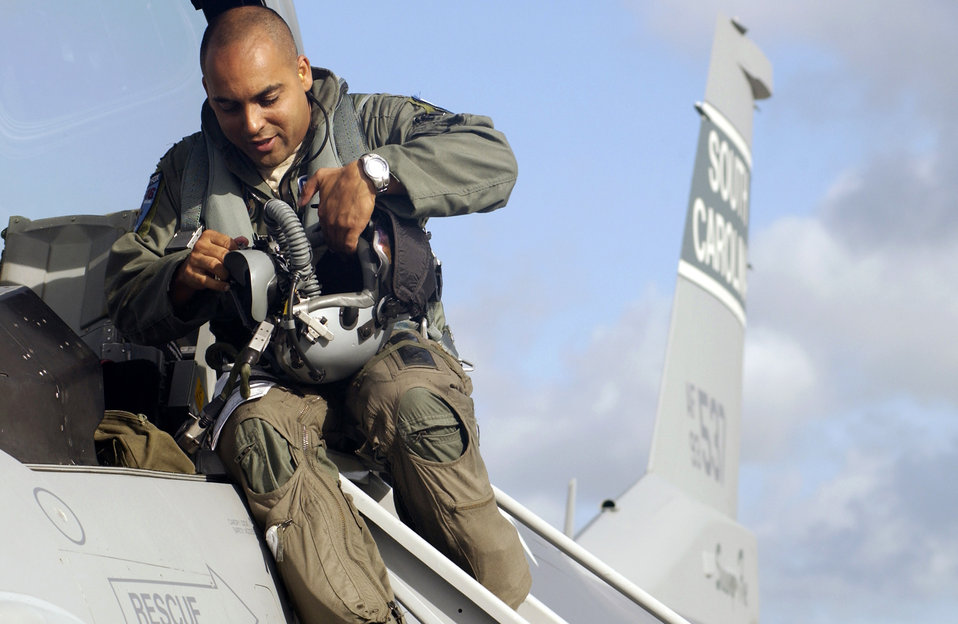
South Carolina Air Guard trains at Kadena

Maj. Abu Ghandi checks his helmet before takeoff at Kadena Air Base, Japan, Sept. 11. Twelve aircraft and more than 300 Airmen from the South Carolina Air National Guard's 157th Fighter Squadron are deployed to Kadena to conduct theater orientation training. Major Ghandi is an F-16 Fighting Falcon pilot assigned to the 157th FS.